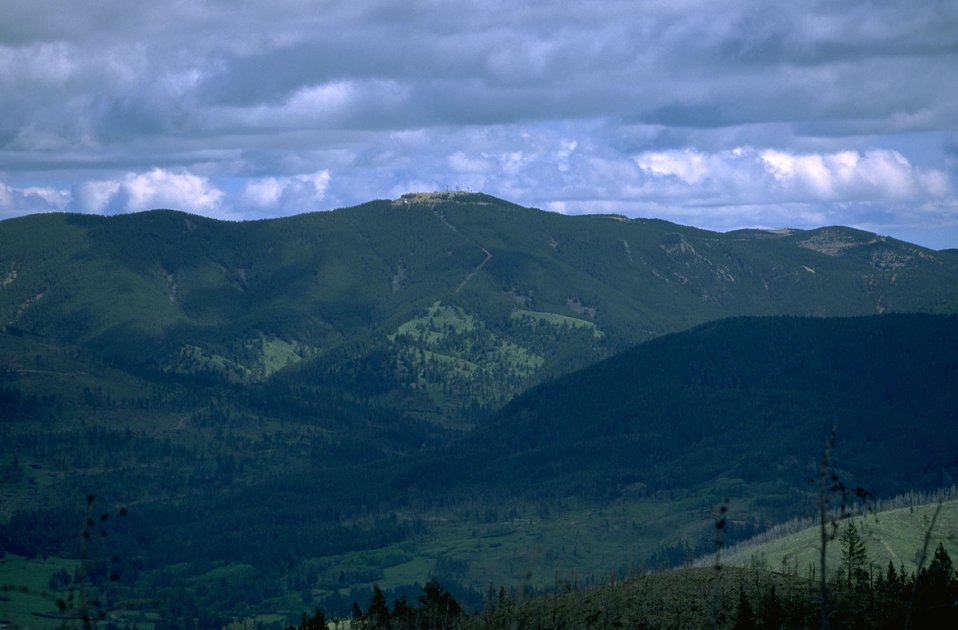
Communication Site on a mountain top in the Judith Mountains